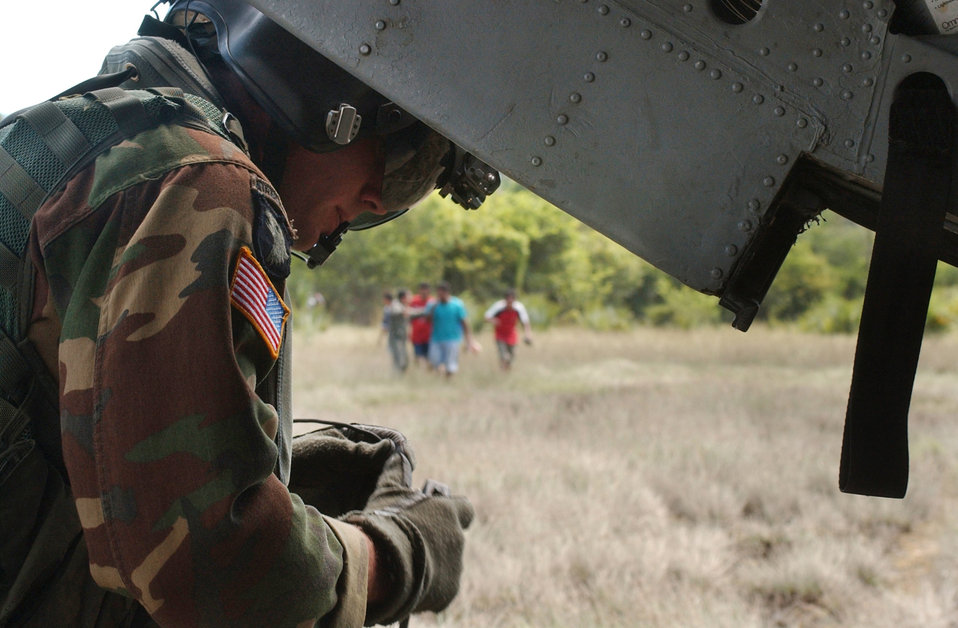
Guatemala relief aid

OCOS, Guatemala -- Army Sgt. Damon Houle prepares to unload food, water and medicine to villagers here. The 1st Battalion, 228th Aviation Regiment arrived here Oct. 7 with other members of Joint Task Force-Bravo to help transport relief supplies to those living in areas of Guatemala affected by Hurricane Stan. Sergeant Houle is a crew chief assigned to the 1-228th AR.